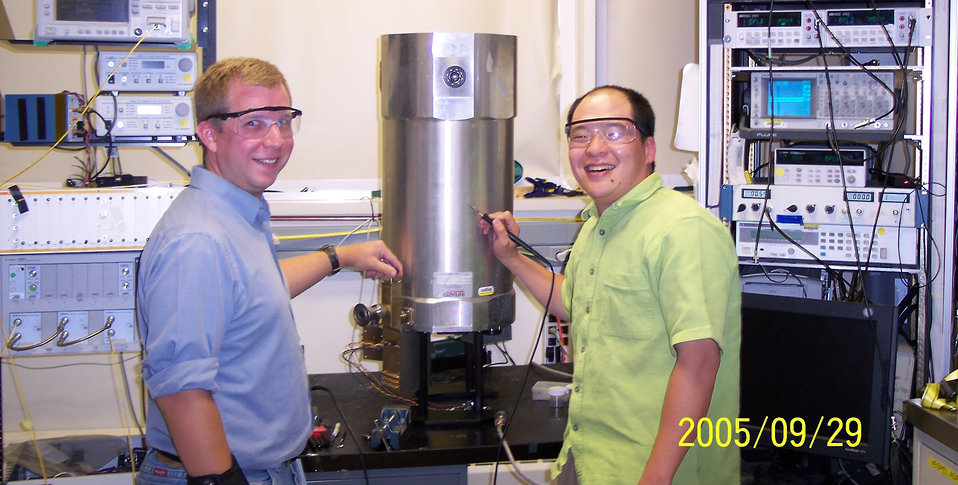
Potential of Optical Systems for the Development of quantum computing devices

National Research Council Postdoctoral Fellow Scott Glancy (left) of ITL discusses the potential of optical systems for the development of quantum computing devices with Sae Woo Nam of the NIST Electronics and Electrical Engineering Laboratory. (September 2005)